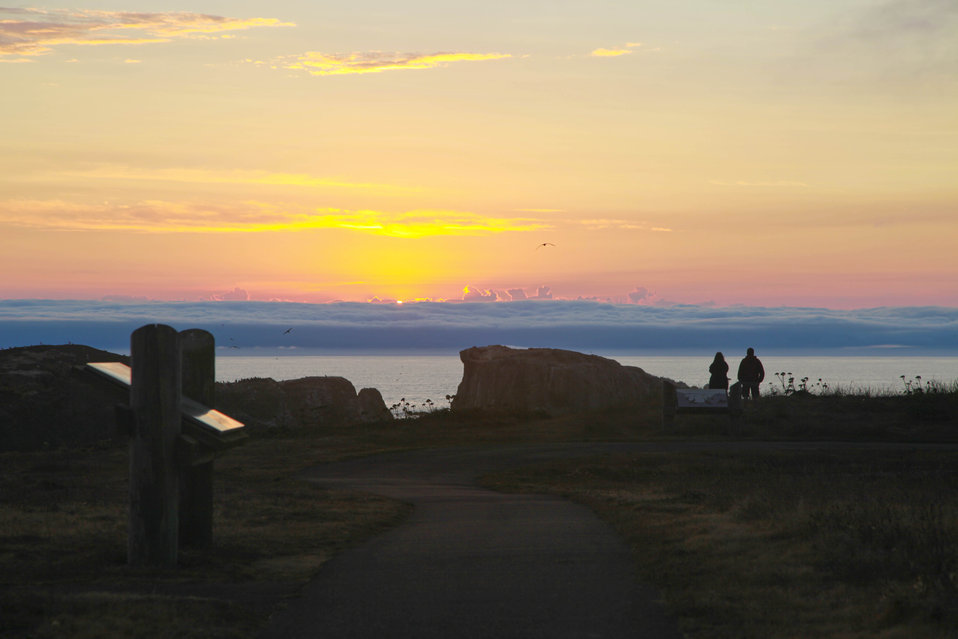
Oregon Islands sunset

Sunset at the Coquille Point Unit of Oregon Islands National Wildlife Refuge in Bandon, OR.